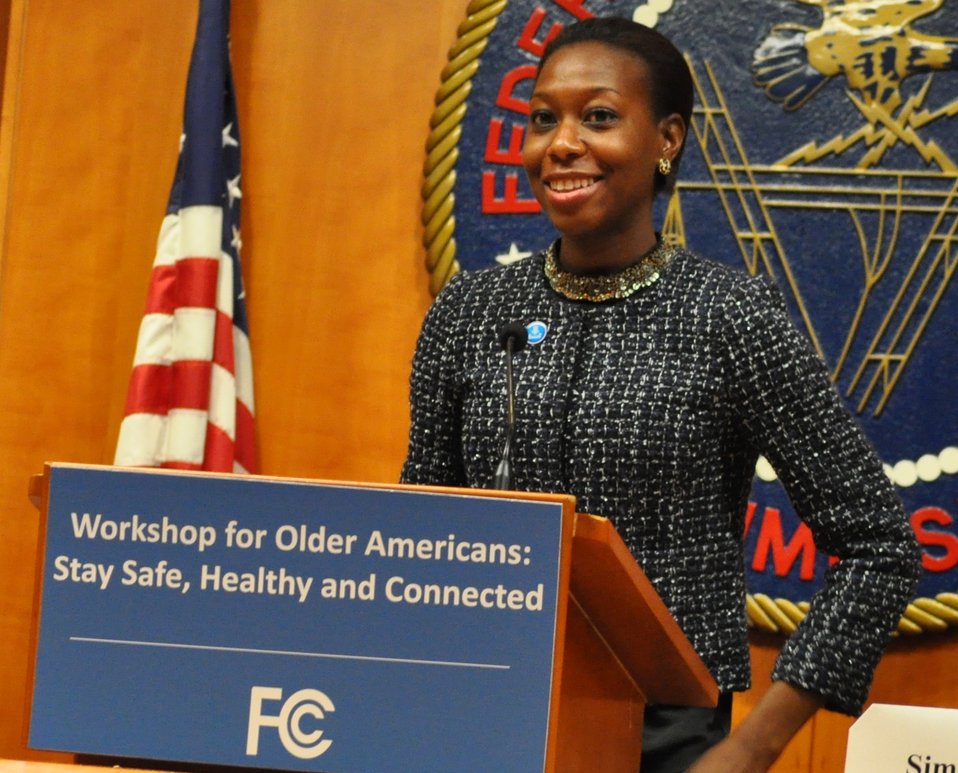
8

Simone Myrie, Public Health Analyst, Office of Consumer eHealth, Office of National Coordinator for Health IT,
Department of Health and Human Services